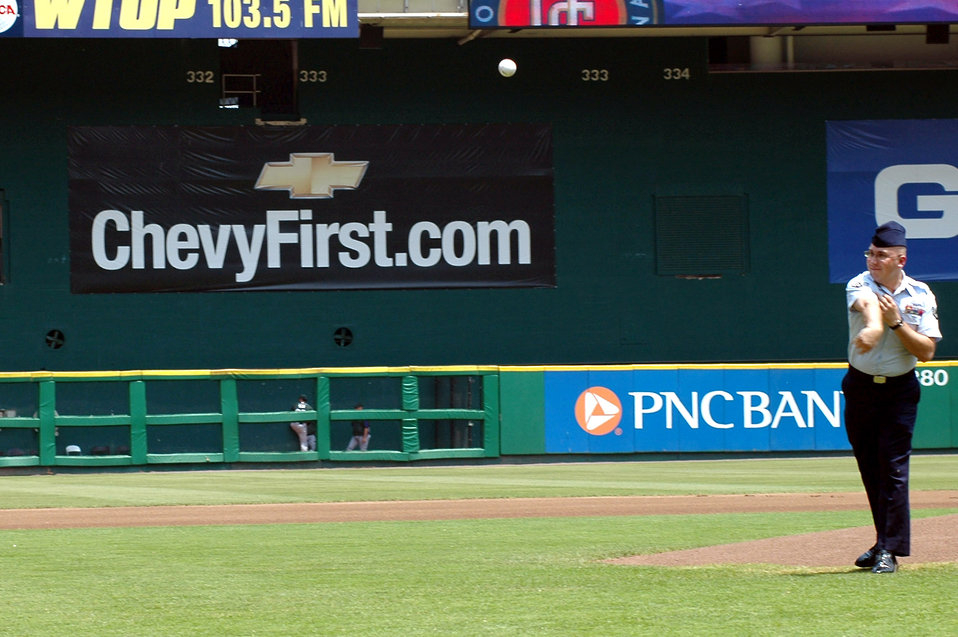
Nationals game

Senior Airman Joseph Buzanowski was one of five servicemembers given the opportunity to throw out a ceremonial